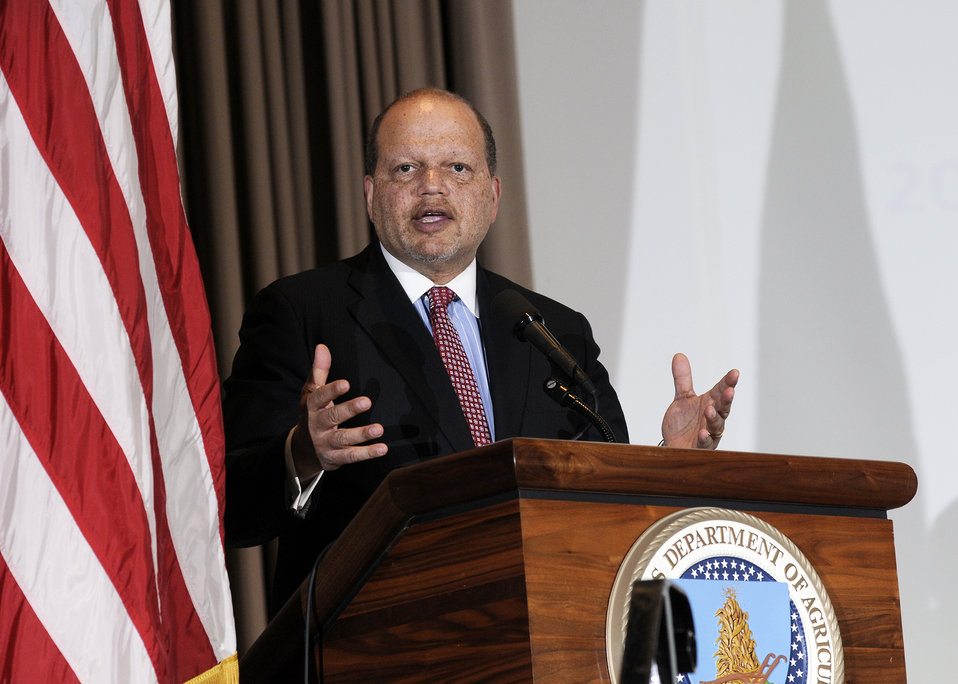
Professor of Law, Columbia University of Law Theodore Shaw is the keynote speaker at the U.S. Department of Agriculture's (USDA) Dr. Martin Luther King, Jr. National Service Day presentation of the Drum Major for Service Awards at the USDA Jefferson Auditorium in Washington, D.C. on Tuesday, Jan. 15, 2013.